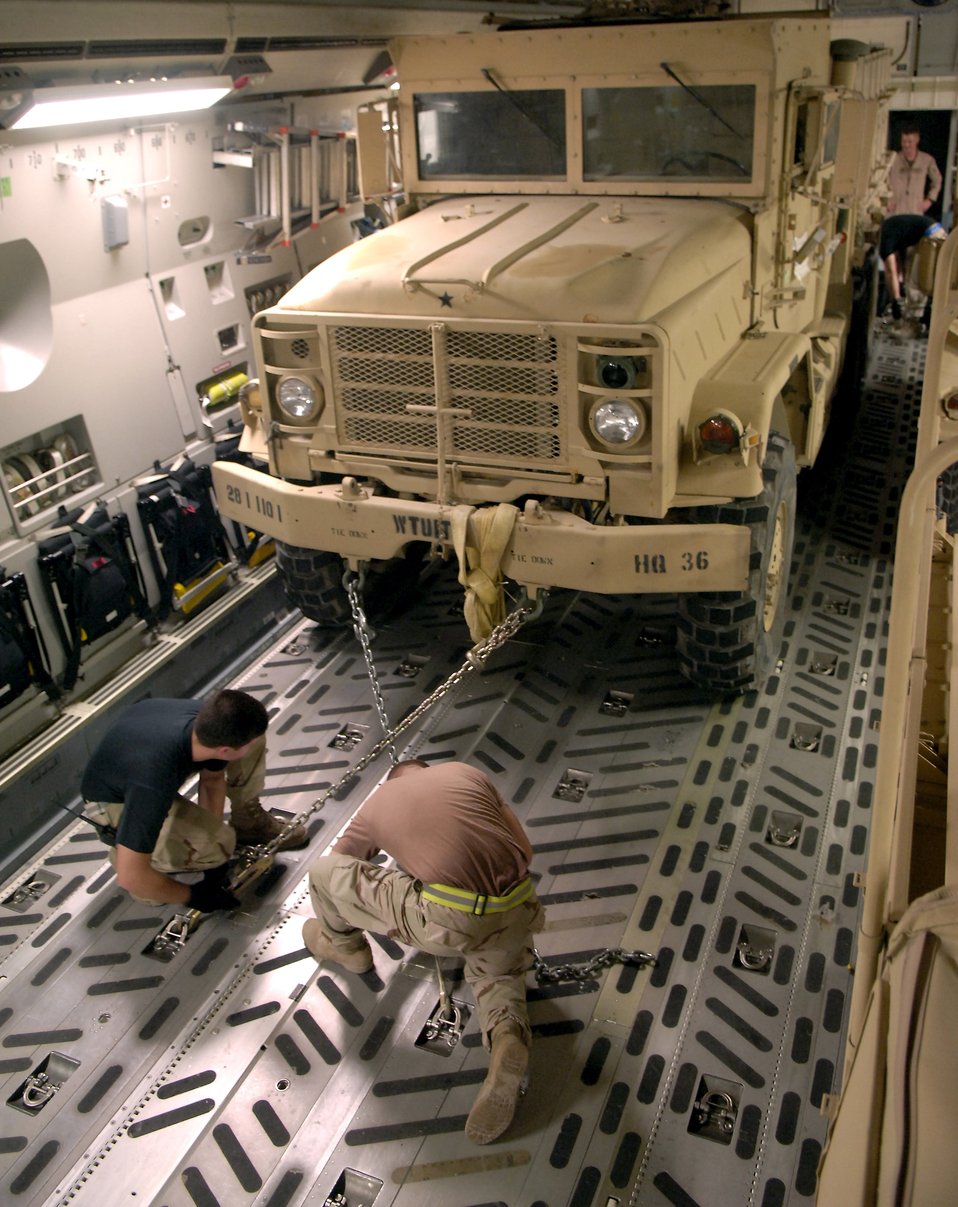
Preparing for delivery

Airmen 1st Class James Kerr (right) and Spencer Stacey chain down a truck in a C-17 Globemaster III before takeoff from a forward operating location in Southwest Asia on Aug. 5. A C-17 from the 816th Expeditionary Airlift Squadron transported the vehicle to Afghanistan in support of Operation Enduring Freedom. Airman Kerr is with the 8th Expeditionary Aircraft Maintenance Squadron; Airman Stacey is with the 816th EAS.